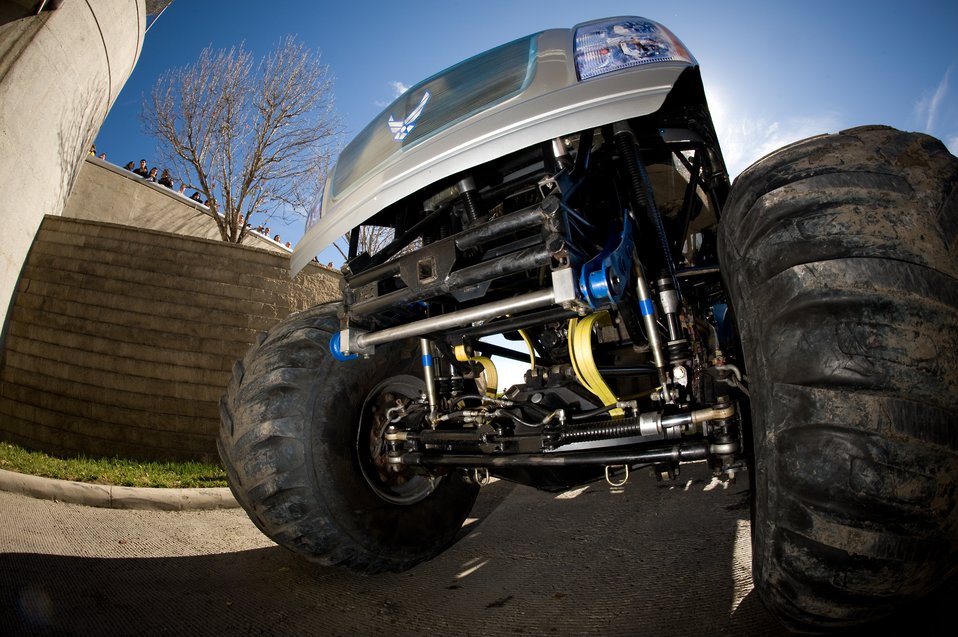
AF flies high at Monster Jam

2009 Monster Jam fans got an eyeful at the Alamodome Jan. 11 in San Antonio when Air Force Afterburner and 15 other monster trucks made their entrance into the arena. Approximately 45,000 people attended the event. Afterburner has a 540 cubic-inch Merlin supercharged racing V-8 engine that churns out 1,425 horsepower for its driver, Damon Bradshaw. The 10,000-lb vehicle is equipped with four-wheel steering and can be made to continuously spin on a dime. The massive tires are 66